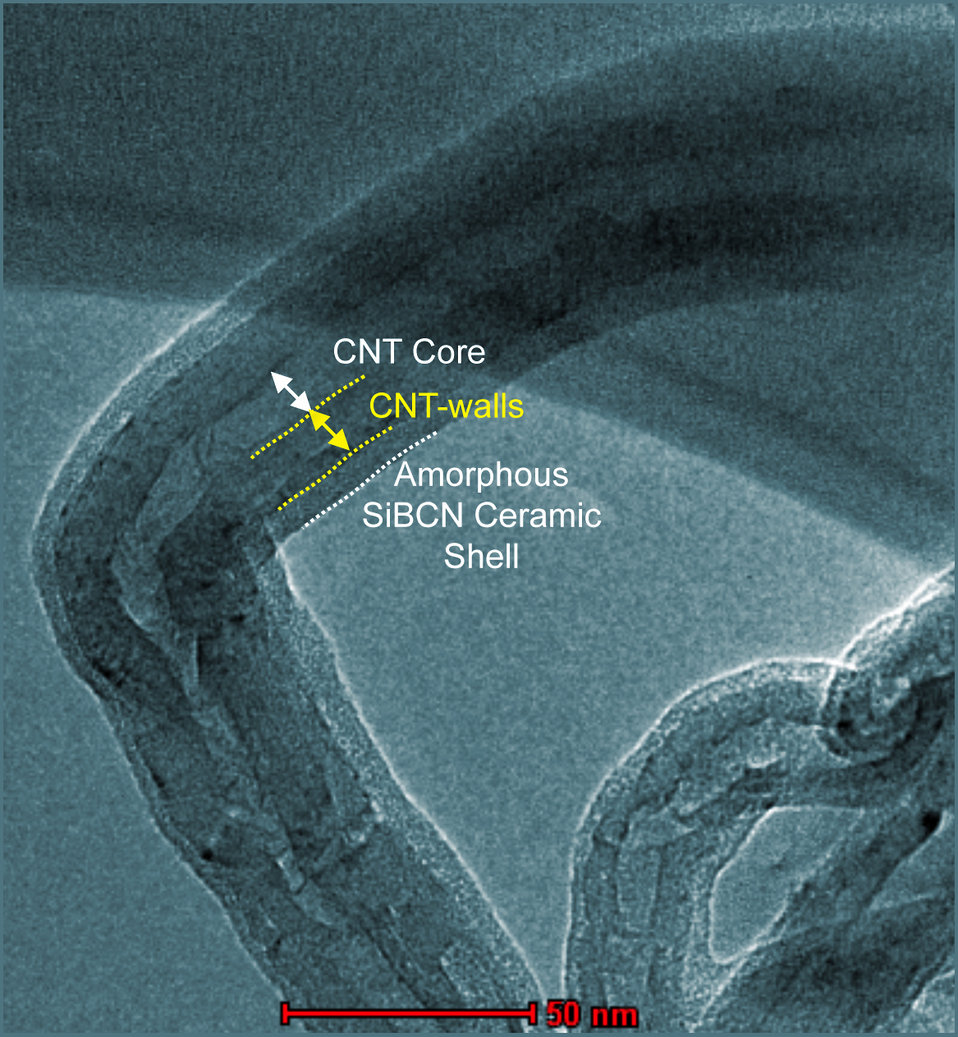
Super-Nanotube Composite

Micrograph of one strand of a new spray-on super-nanotube composite developed by the National Institute of Standards and Technology (NIST) and Kansas State University. The multi-wall nanotube core is surrounded by a ceramic shell. The composite is a promising coating for laser power detectors. (Color added for clarity.)